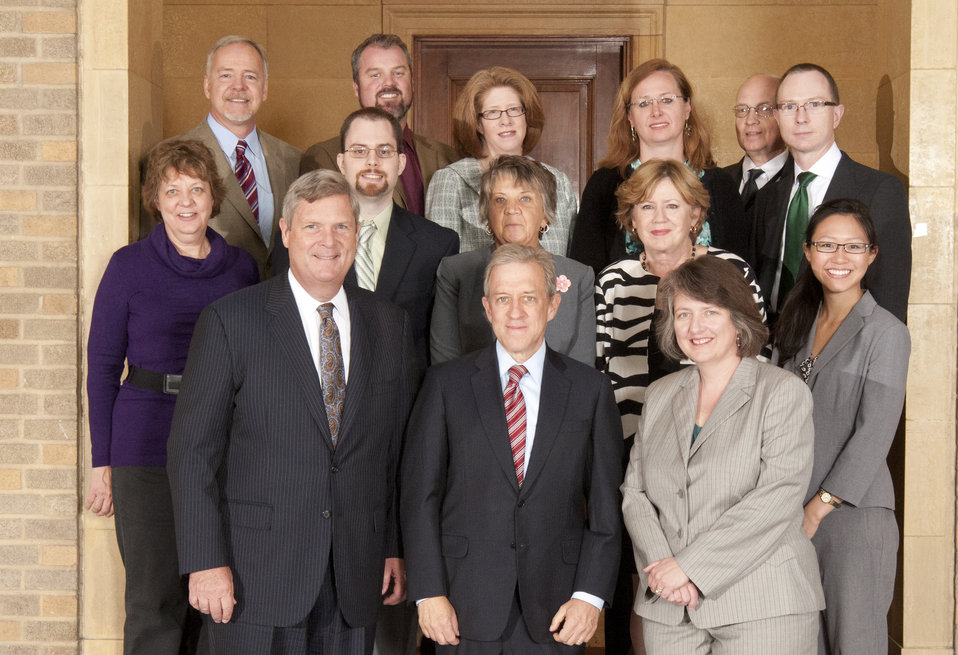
Agriculture Secretary Tom Vilsack and Deputy Agriculture Secretary Kathleen Merrigan with Honor Award Group Plain Language Implementing Team on the patio of the U.S. Department of Agriculture in Washington, D.C. on Wednesday, Sept. 12, 2012. The Plain Writing Act Implementing Team received their award for outstanding results implementing the Plain Writing Act of 2010, enabling USDA to better serve the millions of people who depend on our programs and services.